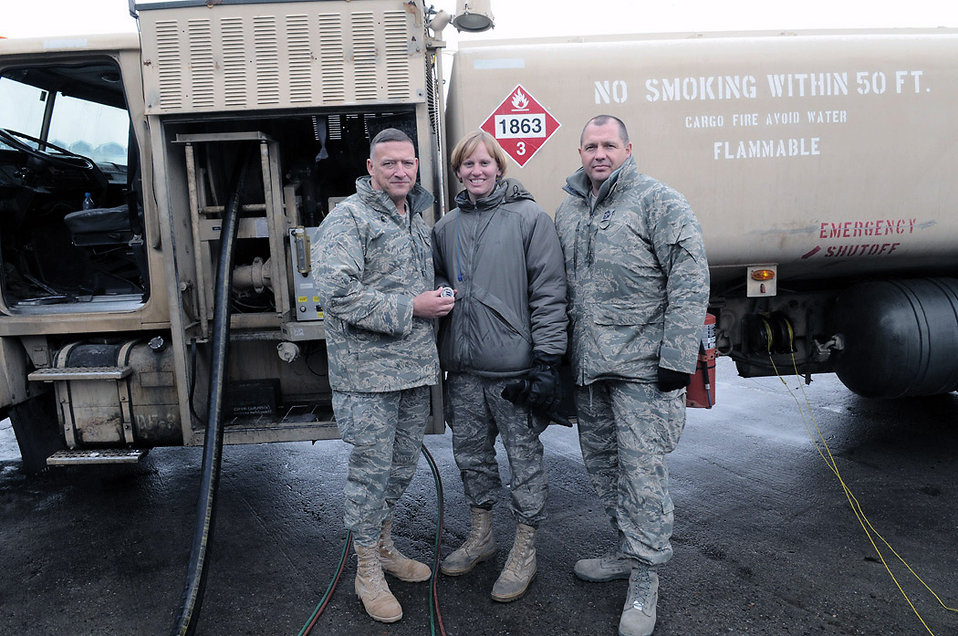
Filler' up--with two million gallons of premium

MANAS AIR BASE, KYRGYZSTAN -- Senior Airman Victoria Drefs, a fuels specialist with the 376th Air Expeditionary Wing here, recieves a commandr's coing from Lt. Gen Gary North, Air Forces Central Commander, for reaching the 2 million gallon mark for fuel delivered during her deployment. The Armour S.D. native, deployed to Manas for four months from Aviano Air Base, Italy, is the first and likely only Airman to reach 2 million gallons this rotation.